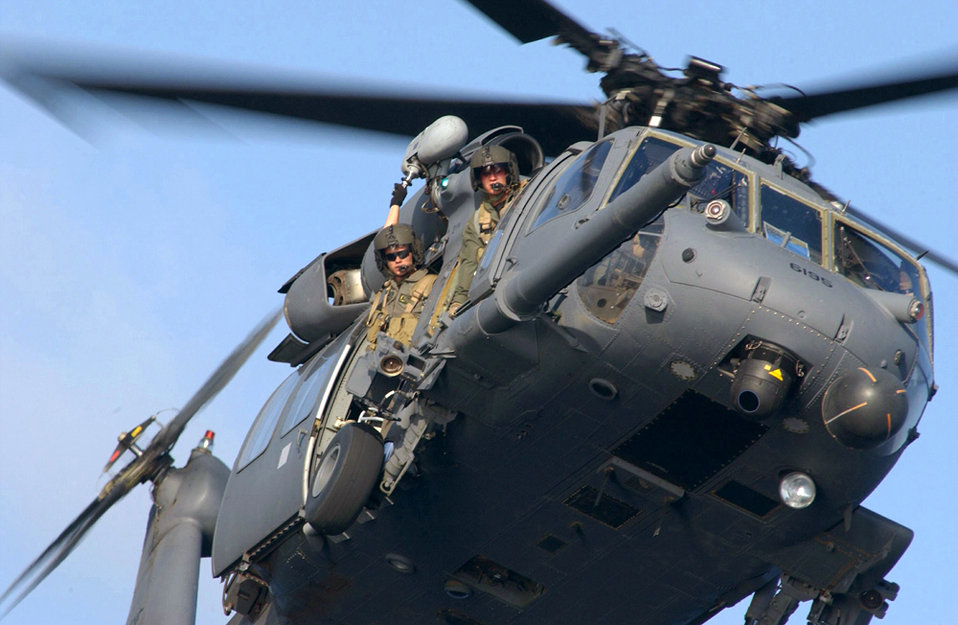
A 'chopper' landing

OVER THE PACIFIC OCEAN -- Tech. Sgt. Jason Arnott and Staff Sgt. Eric Shaw guide the pilot and co-pilot as they prepare to land on a Navy ship near San Diego. The landing was part of water-rescue training for 55th Rescue Squadron HH-60G Pave Hawk helicopter crews. Sergeant Arnott is a crew chief, and Sergeant Shaw is a flight engineer. They are based at Davis-Monthan Air Force Base, Ariz.